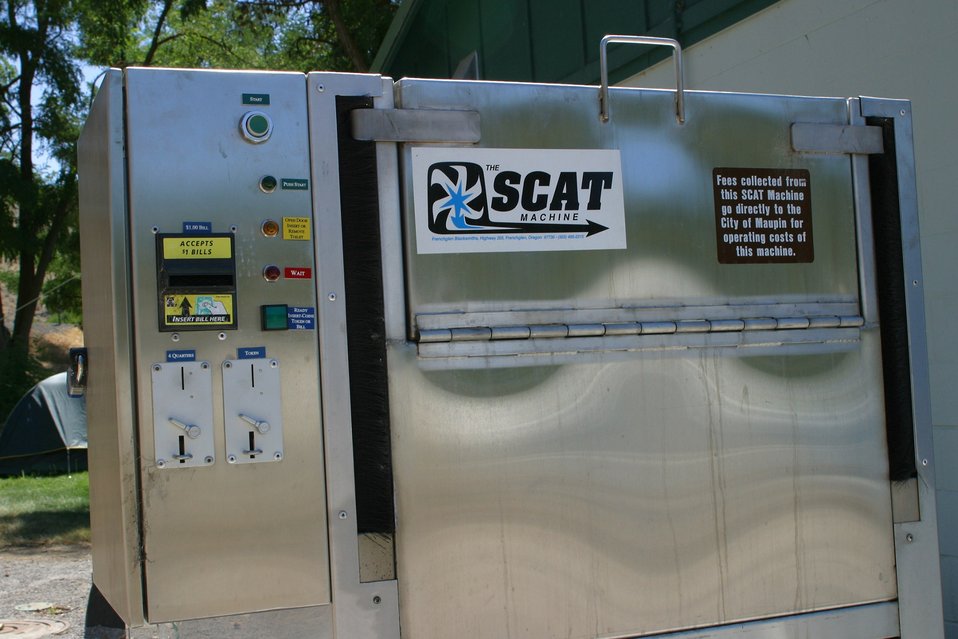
BLM Scat Machine located at the Maupin City Park.